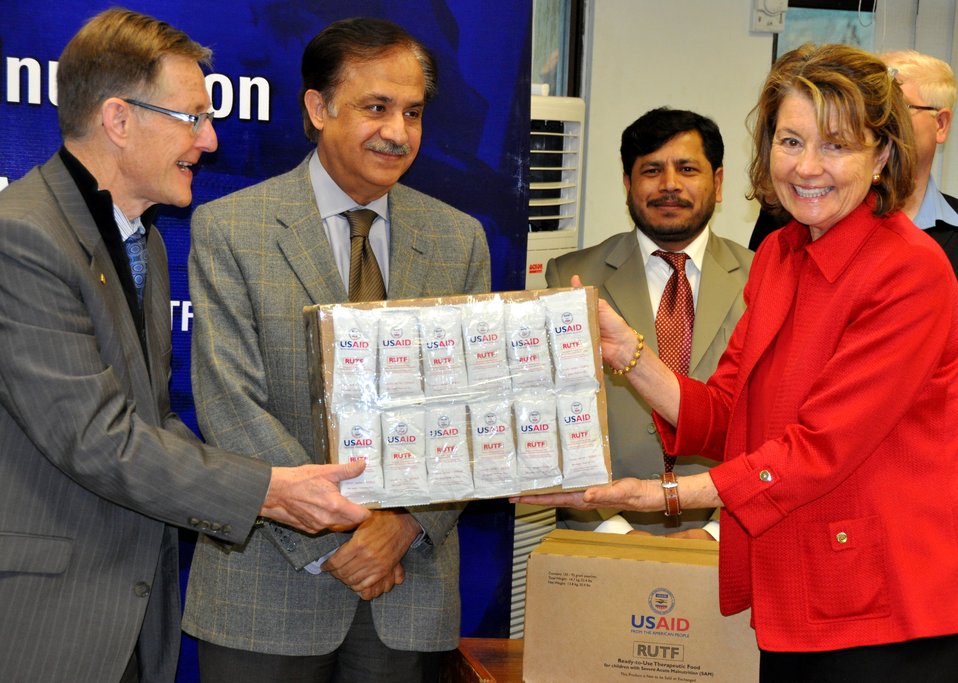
Handover of RUTF

USAID Deputy Mission Director Nancy Estes presented 1,330 metric tons of Ready to Use Therapeutic Food to UNICEF Pakistan Country Director Dr. Dan Rohrmann. Mr. Imtiaz Inayat Ellahi, Federal Secretary, Ministry of National Health Services, Regulation and Coordination, was also present at the occasion.